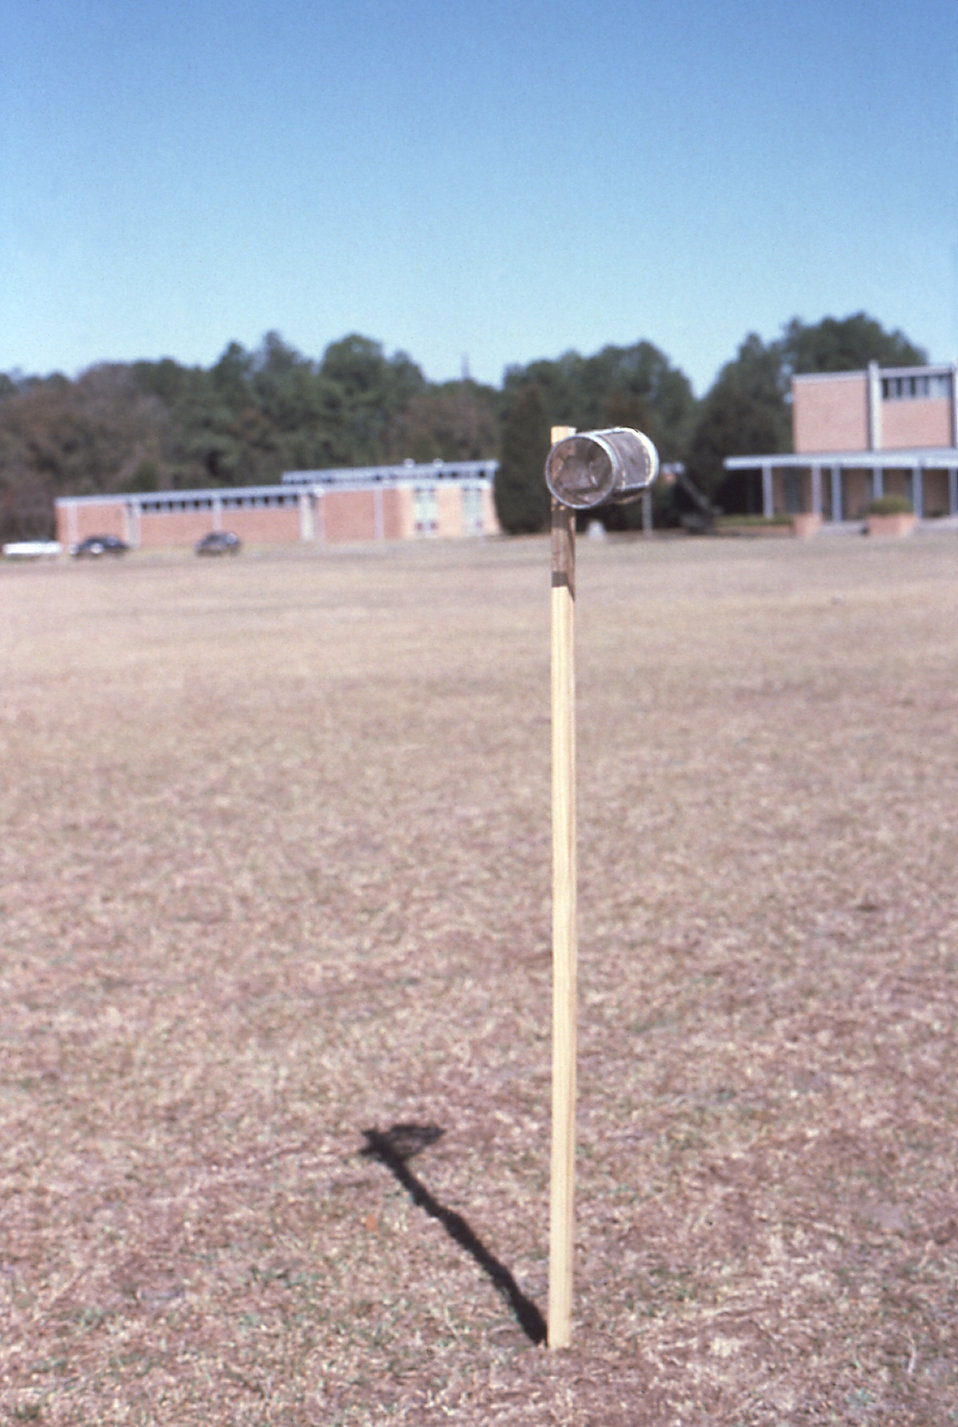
This 1981 photograph depicted a bioassay cage that had been installed in a field situated atop a wooden post, in which endemic mosquitoes were collected to be counted, and analyzed by further testing.